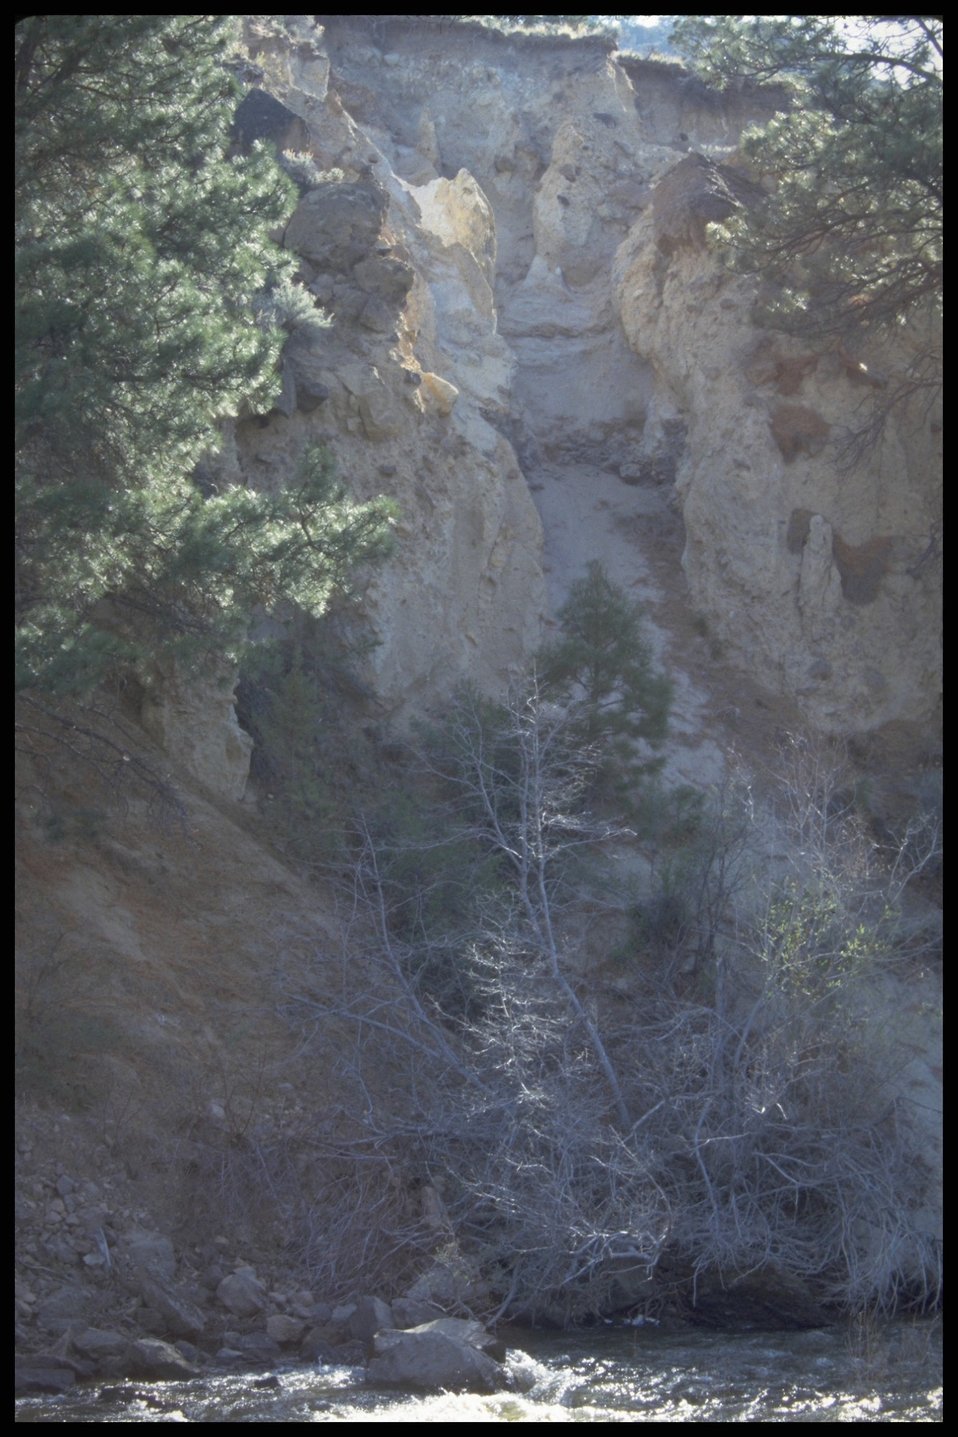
Deep Creek, Lakeview District.